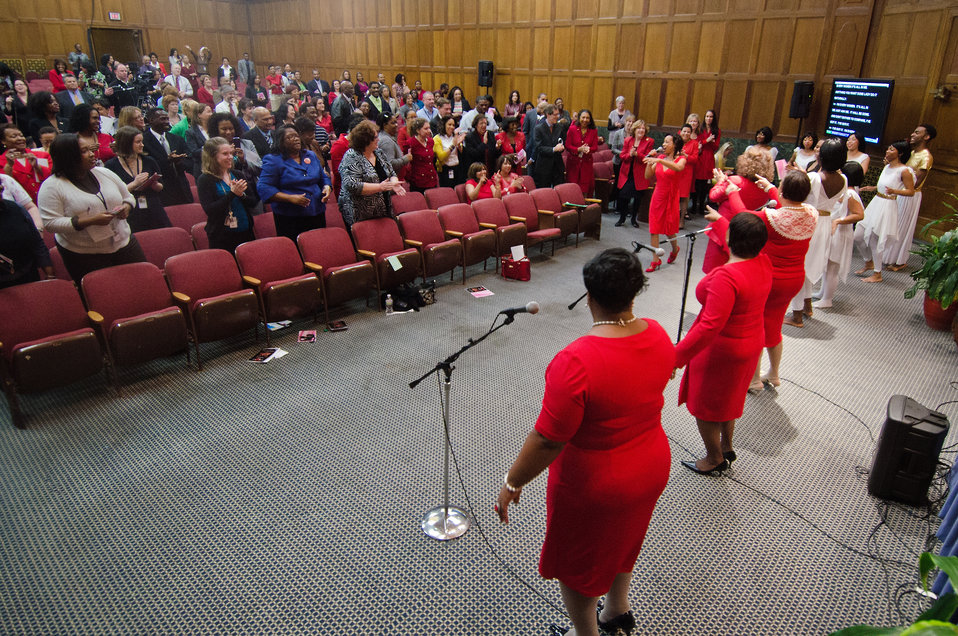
Barbara Smith, Equal Employment Opportunity Specialist, Risk Management Agency and back up singers: Pamela Carter, Rita Meade, Reedema Rock and Daphne Maxwell Reid offered the closing entertainment by singing and involving the audience in a rendition of “I Am Every Woman” at the 2012 Women’s History Month Celebration, “Women’s Education – Women’s Empowerment” held at the United States Department of Agriculture on Thursday, March 8, 2012 in Washington, D.C.